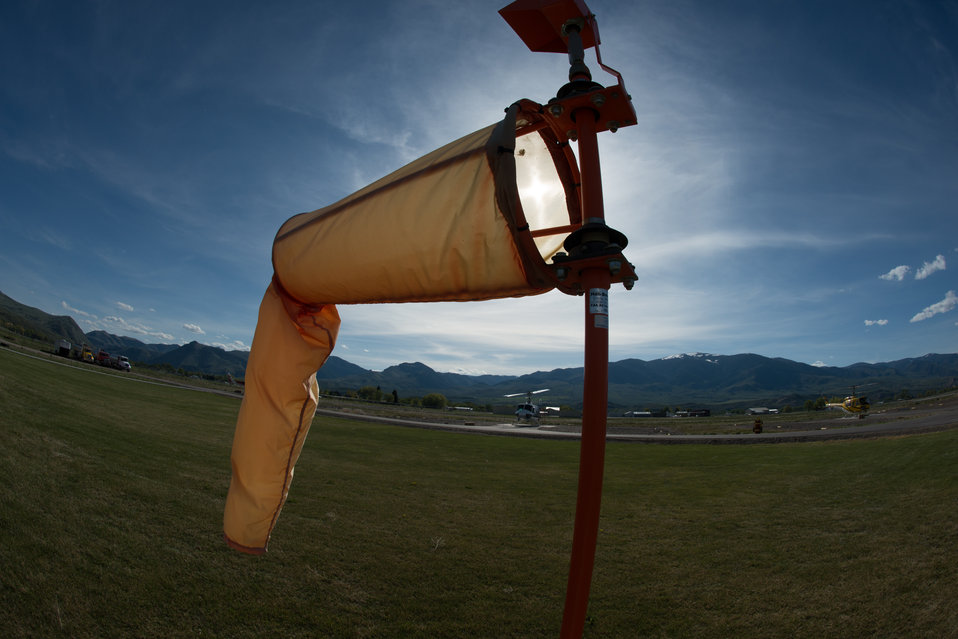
Airfield windsock wafts in a light breeze at Salmon Air Base in Salmon, ID on Wednesday, May 14, 2014. Veteran wildland firefighter rappellers come to train and prepare at the U.S. Department of Agriculture (USDA) U.S. Forest Service (USFS) National Helicopter Rappel Program’s Rappel Academy. From May 12, 2014, 72 veteran rappellers from all over the nation, 30 support staff, and three helicopters with flight crews attend the training at Salmon Air Base. Participants will rappel into the Perreau Creek area. The annual training is delivered in accordance with the National Rappel Operations Guide; strengthen leadership, teamwork, and communications within the rappel community, and produces quality aerial delivered firefighters for use in fire and aviation operations. The USDA Forest Service National Helicopter Rappel Program’s primary mission is initial attack. Rappel crews may be utilized for large fire support, all hazard incident operations, and resource management objectives.